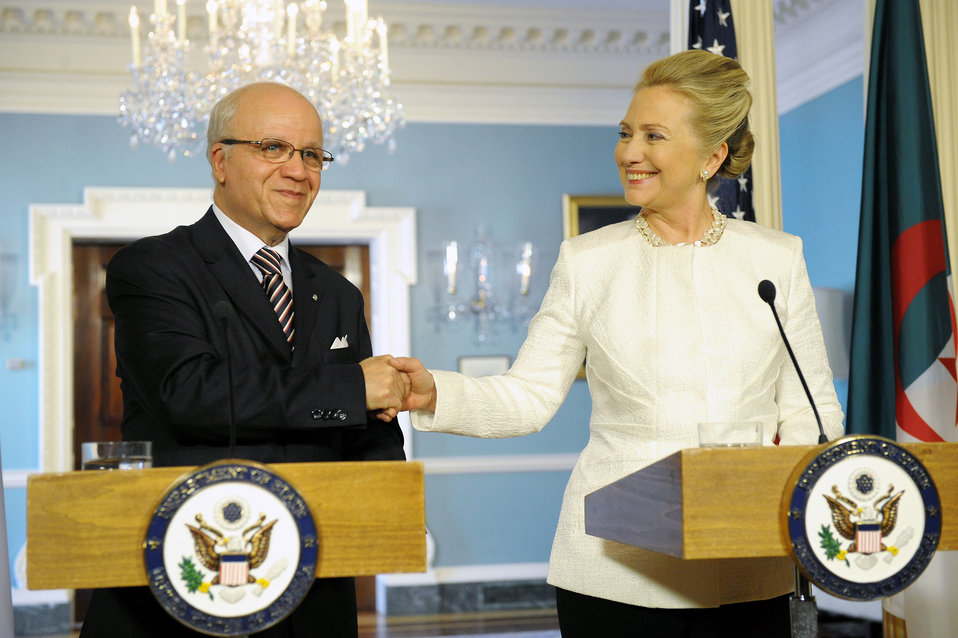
Secretary Clinton Shakes Hands With Algerian Foreign Minister Medelci

U.S. Secretary of State Hillary Rodham Clinton shakes hands with Algerian Foreign Minister Mourad Medelci after their joint press conference at the U.S. Department of State in Washington, D.C., on January 12, 2012.